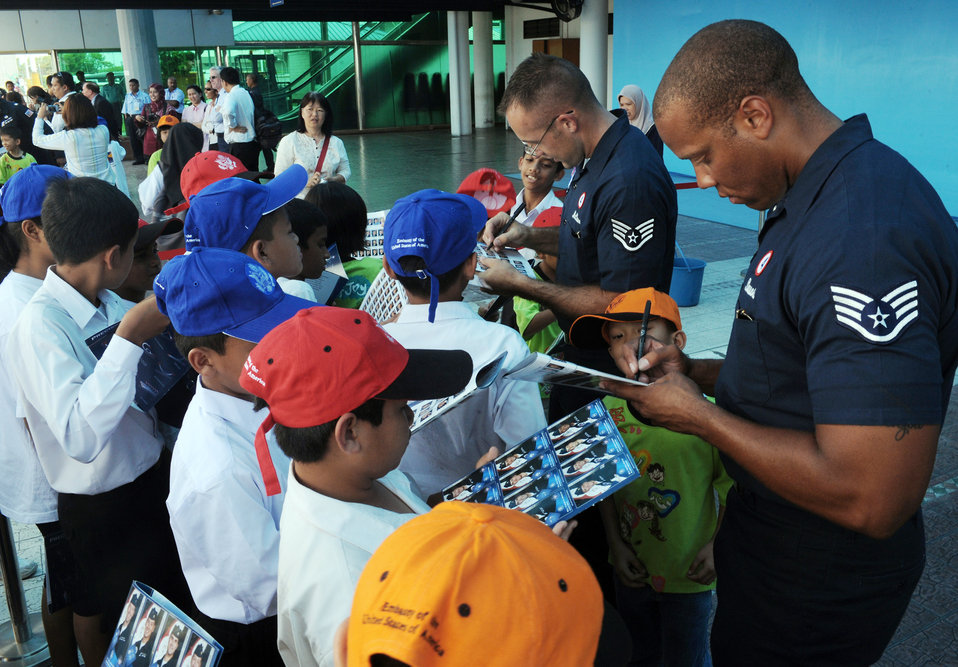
Thunderbirds perform for Malaysian audience

Staff Sgt. Chris McClure (left) and Staff Sgt. Anthony Stewart visit with Malaysian school children Oct. 1, 2009, in Kuala Lumpur, Malaysia. The U.S. Air Force Air Demonstration Squadron, the Thunderbirds, participated in the Malaysian air show.